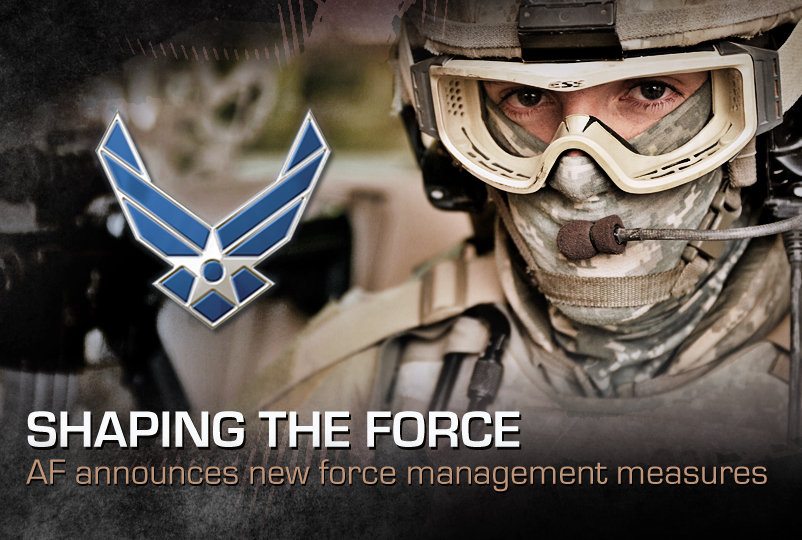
Shaping The Force